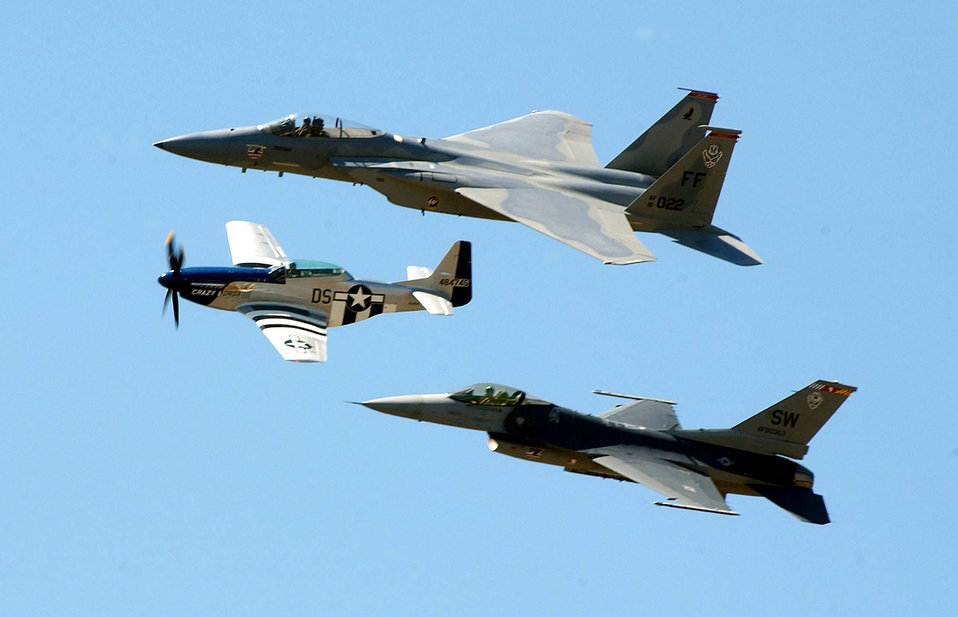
Demonstrating air-power heritage

MACDILL AIR FORCE BASE, Fla. -- In a formation known as the